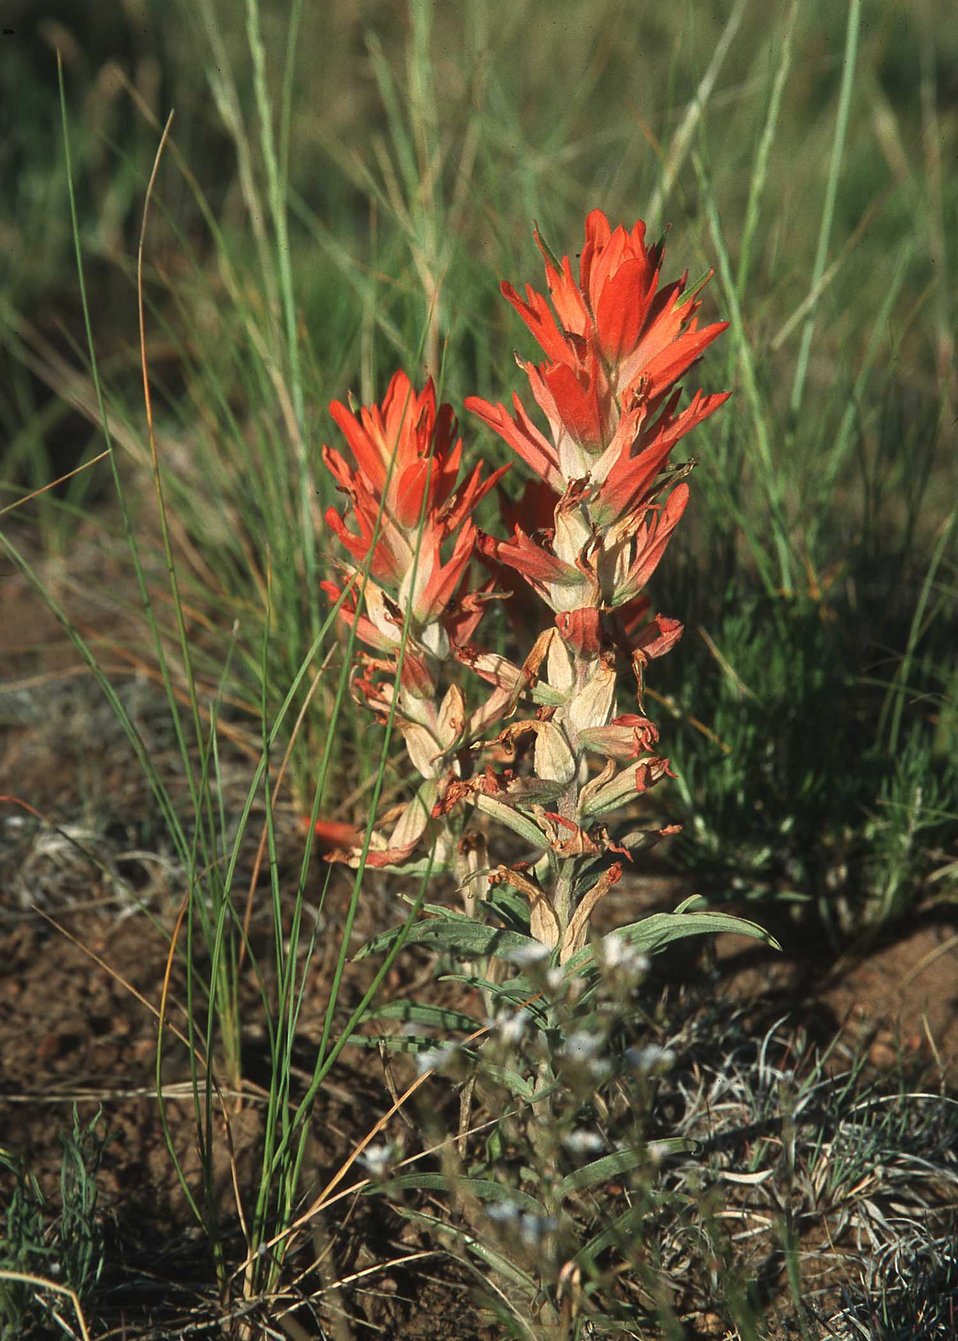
Indian Paint Bruch, CO.